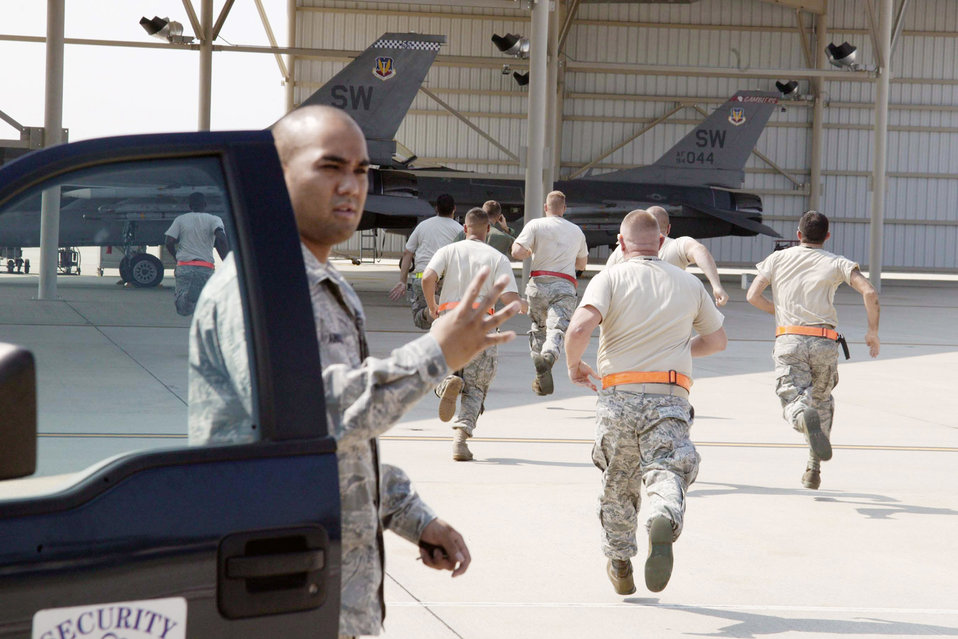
Shaw Airmen train with South Carolina Civil Air Patrol

Alert maintenance Airmen dash to their F-16 Fighting Falcons to prepare them for takeoff on a quick-reaction mission exercise while Airman Basic Julian Arnold checks badges to make sure everyone has proper access Aug. 11 at Shaw Air Force Base, S.C. The exercise, with cooperation from the Civil Air Patrol, provides interception training for Shaw AFB alert forces for real-world situations. Airman Arnold is assigned to the 20th Security Forces Squadron.